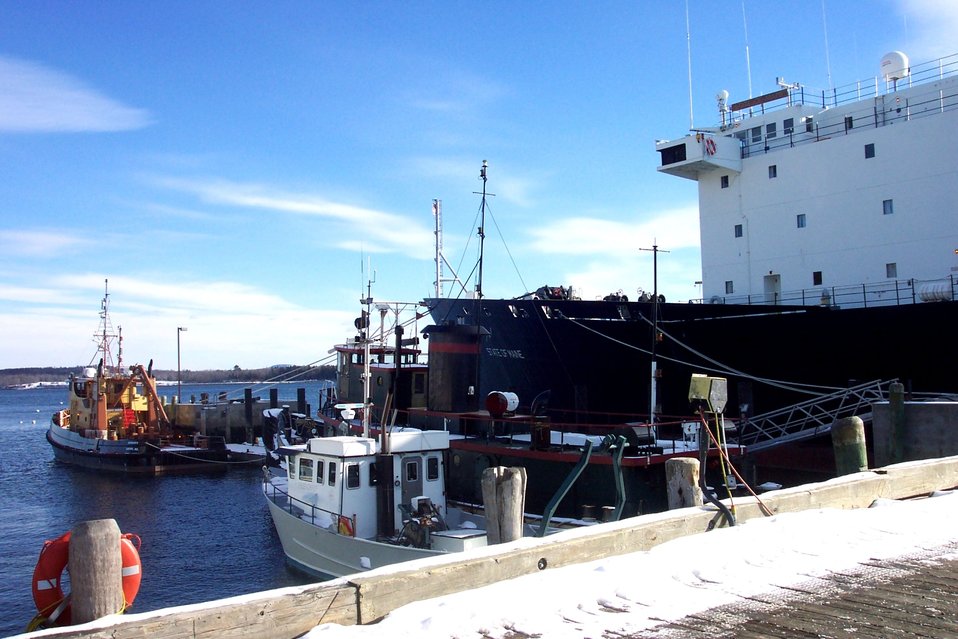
Training vessel STATE OF MAINE tied up at the Maine Maritime Academy pier at Castine Maine.